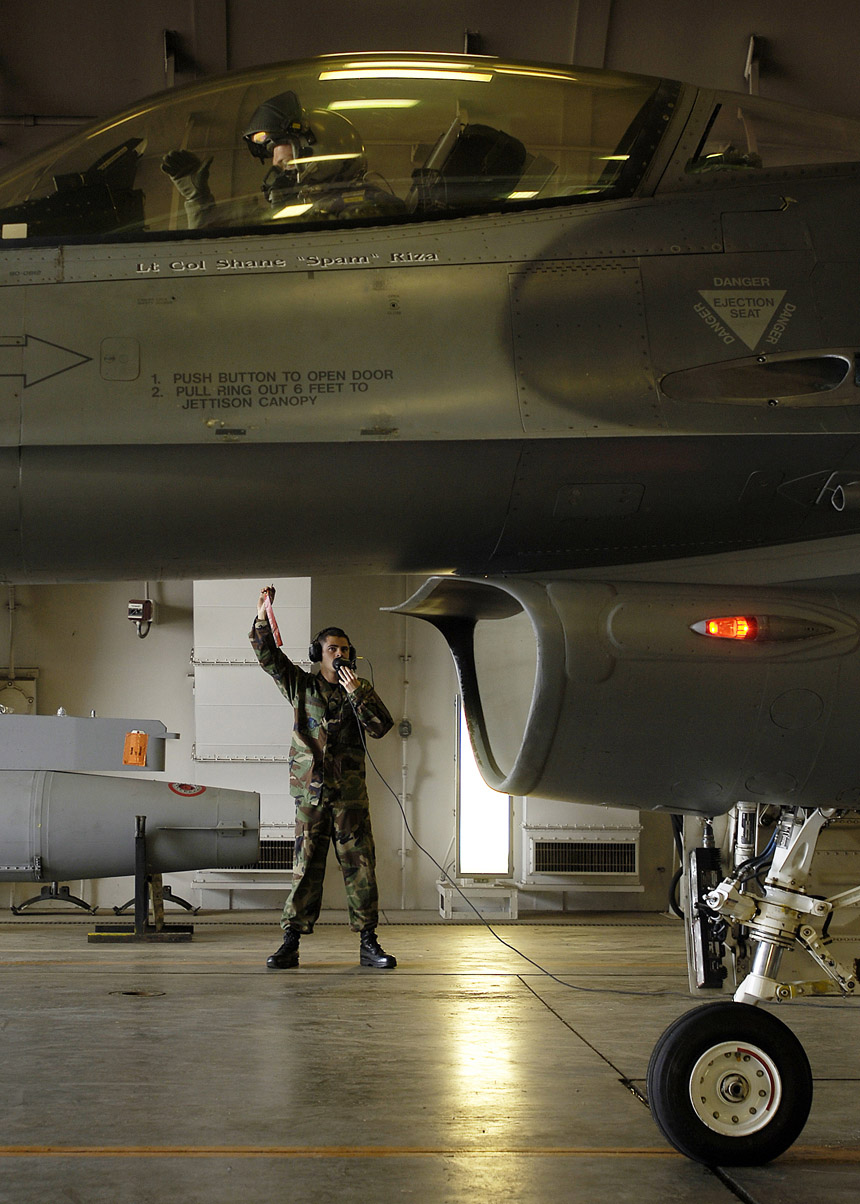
All clear!

Senior Airman Mario Almaraz speaks with a pilot while doing the pre-flight checks on an F-16 Fighting Falcon July 16 at Misawa Air Base, Japan. He is with the 35th Fighter Wing Aircraft Maintenance Squadron.